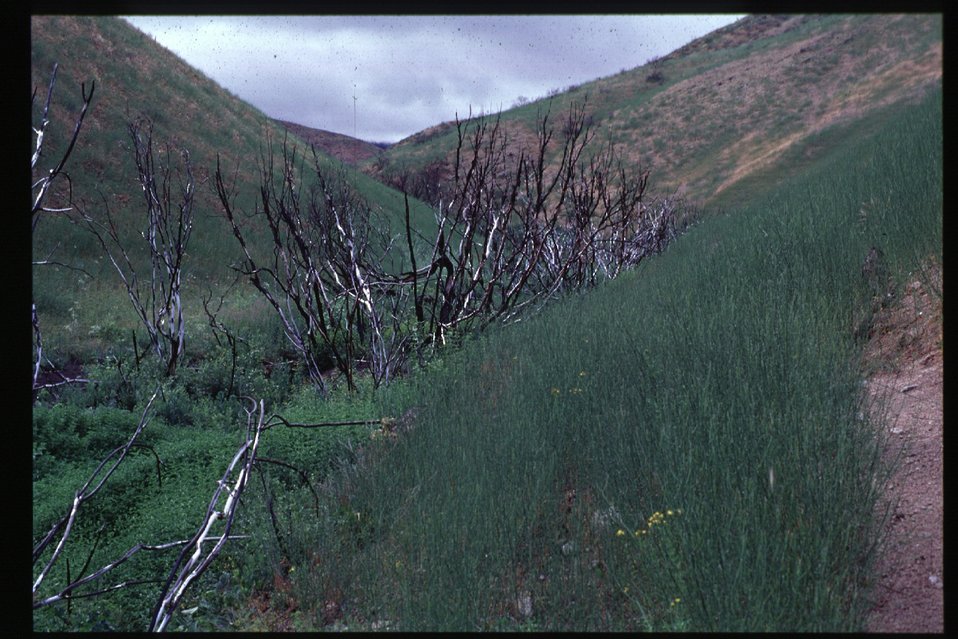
8th Street Fire Four Rivers Field Office LSRD Lower Snake River District